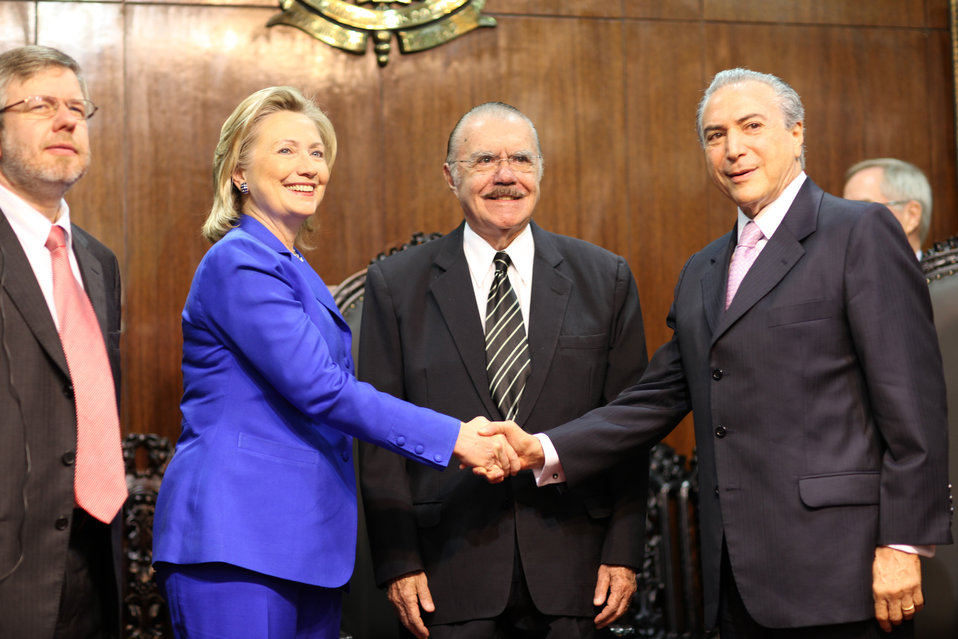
Secretary Clinton Greets Michel Temer

Standing beside Jose Sarney, U.S. Secretary of State Hillary Rodham Clinton greets Michel Temer, Presidente of the Chamber of Deputies, at the meeting of Brazilian Congress leaders in Brasilia, Brazil March 3, 2010.